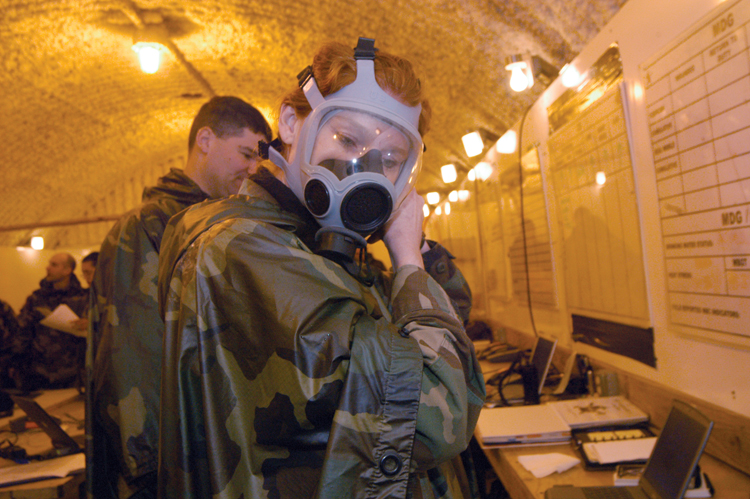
Practice makes perfect

ROBINS AIR FORCE BASE, Ga. -- Lt. Col. Rebecca Seese makes some adjustments to her gas mask during an exercise here recently. The exercise measures the overall effectiveness of servicemembers to perform technical and survival skills in combat environments.